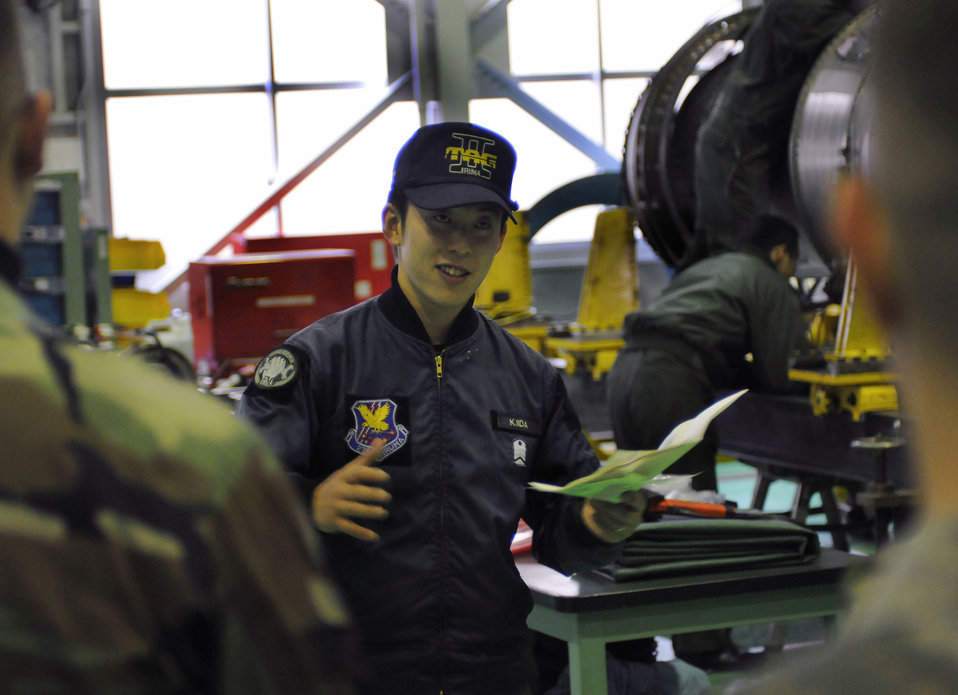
Yokota Airmen strengthen bonds with Japanese military

Japanese Staff Sgt. Kousuke Iida briefs American Airmen of the 374th Maintenance Group on maintaining the C-1 jet engine Dec. 17 at Yokota Air Base, Japan. Members of the 374th Airlift Wing and Japanese Air Self Defense Force participate in these events to find out how each operates and maintains their aircraft. Sergeant Kousuke is an aircraft engine maintenance technician from the Japanese Air Self Defense Force.